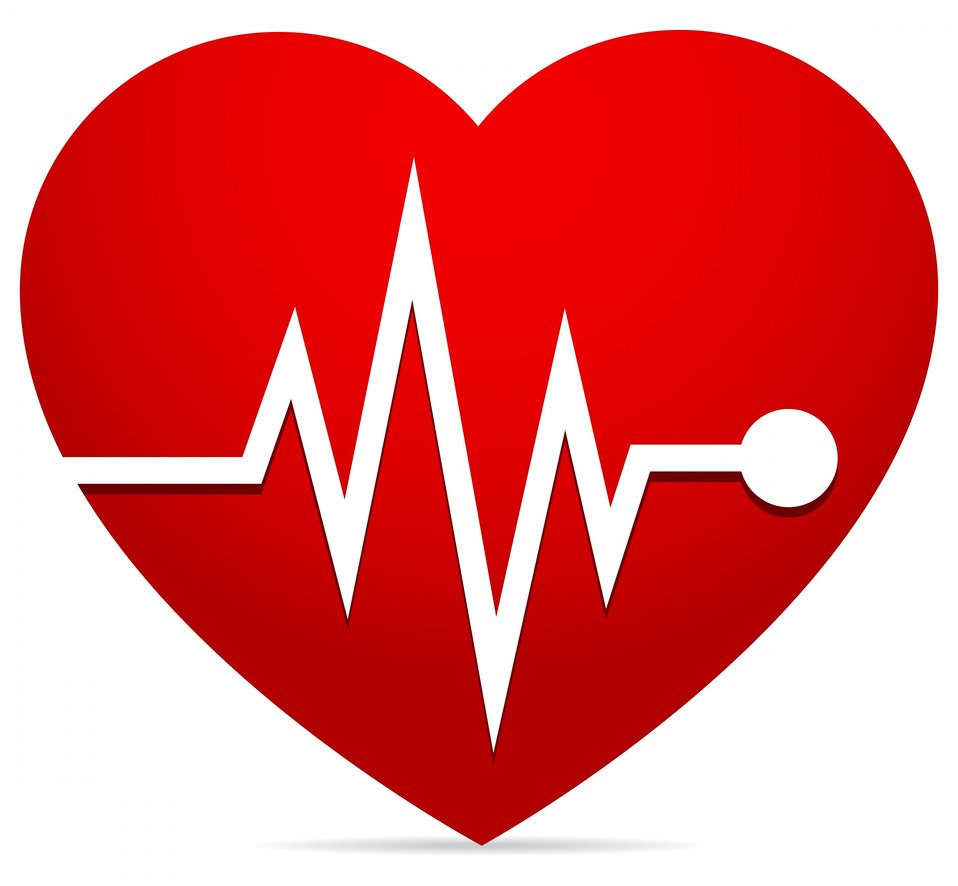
Heart-rate, ekg (ecg), heart beat

Heart with ekg line - heart-rate, ekg (ecg), heart beat concepts..